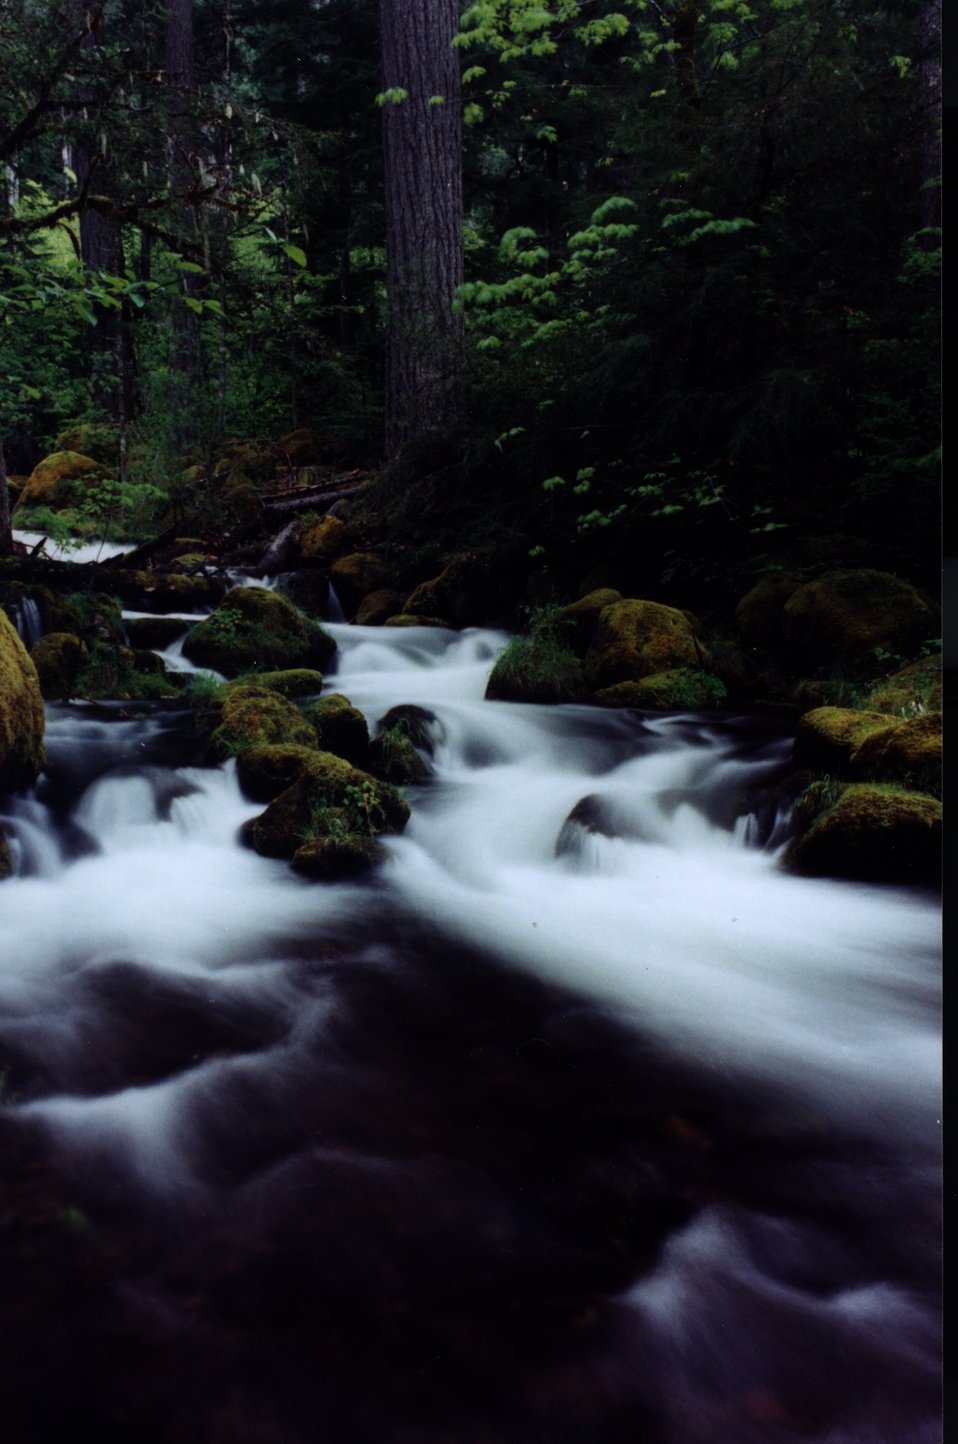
North Umpqua River.